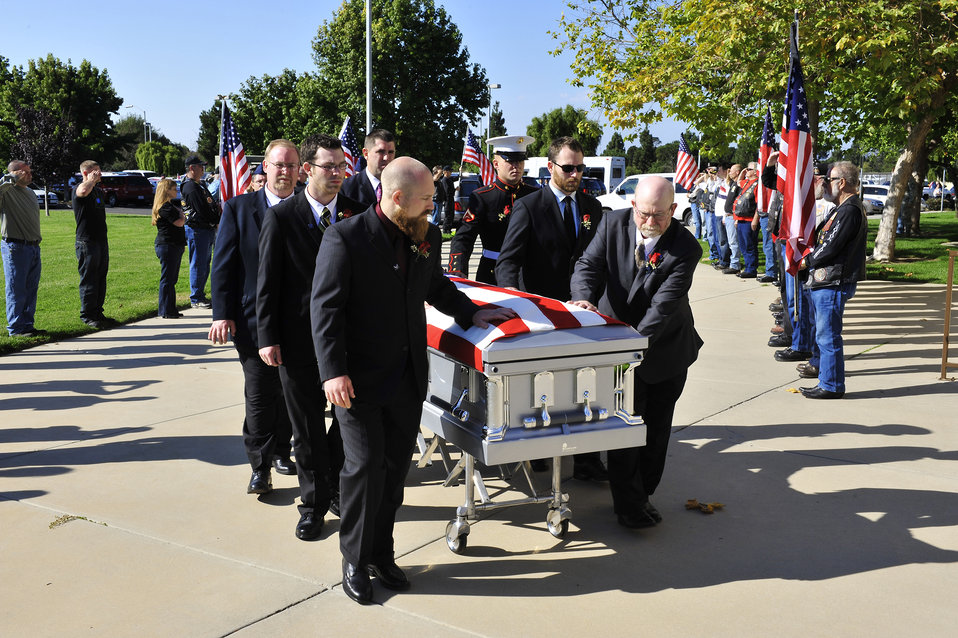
Memorial service for fallen Airman

Family and friends of Senior Airman Daniel Johnson escort his remains into the First Christian Church Oct. 13, 2010, in Santa Maria, Calif. Airman Johnson, a 30th Civil Engineer Squadron explosive ordnance disposal flight technician, was killed in the line of duty Oct. 5, 2010, in Kandahar, Afghanistan.